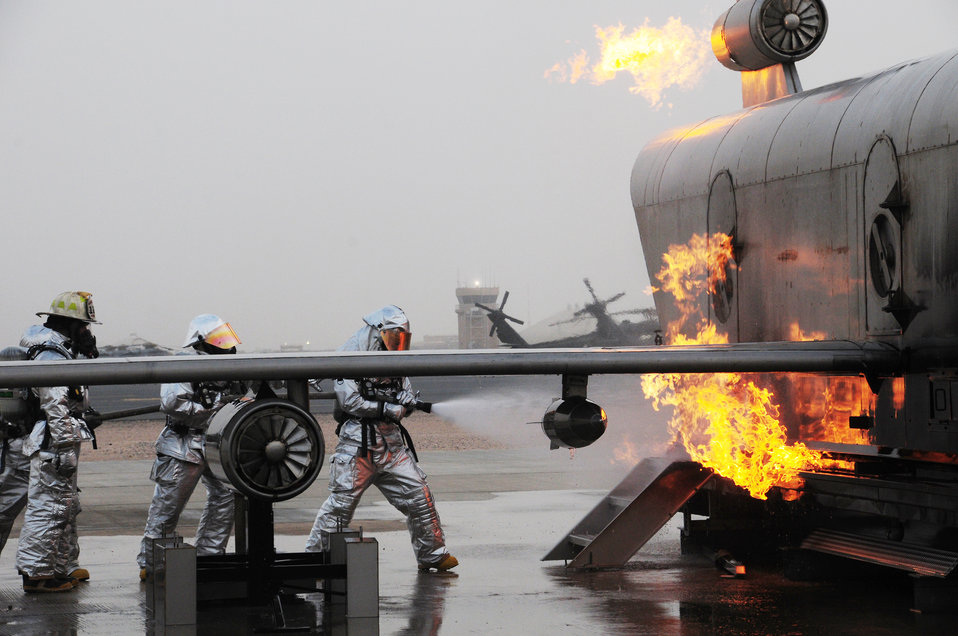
Firefighters test their skills

Firefighters practice extinguishing an aircraft fire April 29, 2010, during fire training at an air base in Southwest Asia.